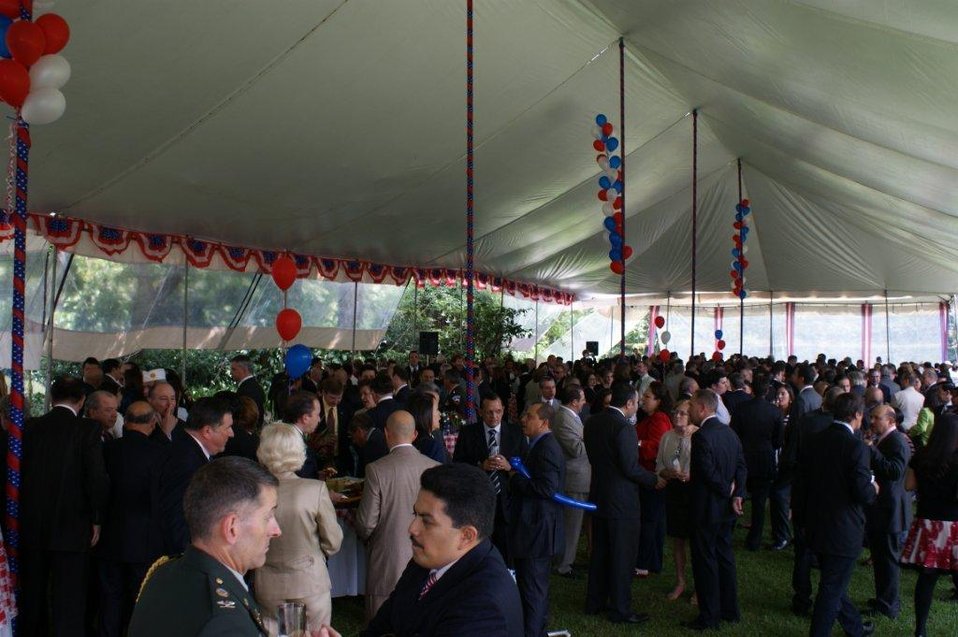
July 4th Celebration at U.S. Embassy in Guatemala

Guests enjoy food and music on the lawns of the Ambassador's Residence for the U.S. Independence Day celebration in Guatemala City, Guatemala, on July 2, 2010.